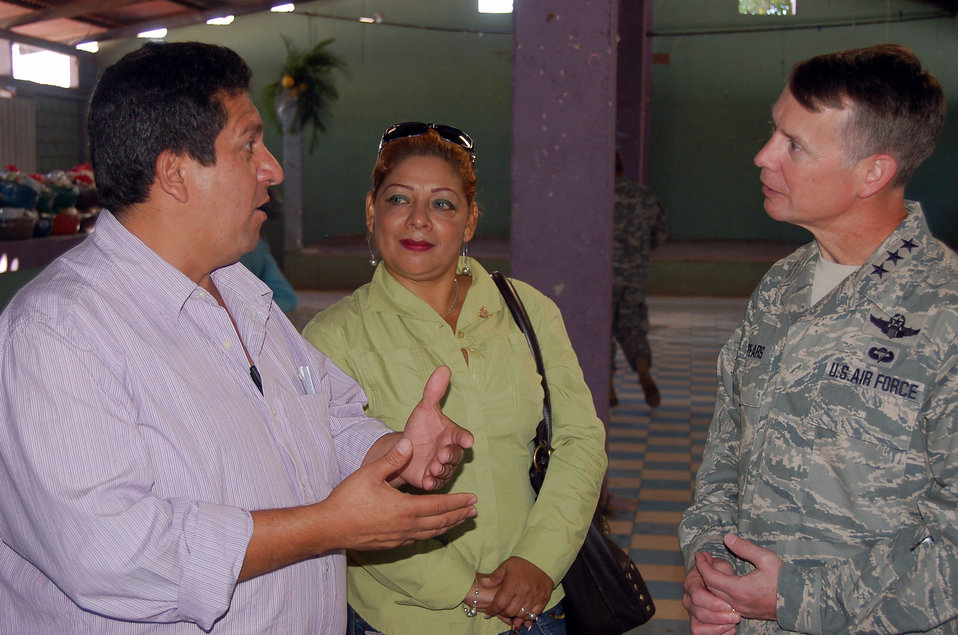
Southern Command, AF South Leadership visit deployed troops

Mario Palencia, the Mayor of Ajuterique (left), and Maria Martinez, governor of Comayagua expressed their gratitude to Lt. Gen. Glenn Spears, U.S. Southern Command deputy commander, Dec. 9, for help at Ajuterique, Honduras. The town contains 11,000 people affected by a recent flooding. The group handed out food-laden gift baskets to the ones hardest hit.